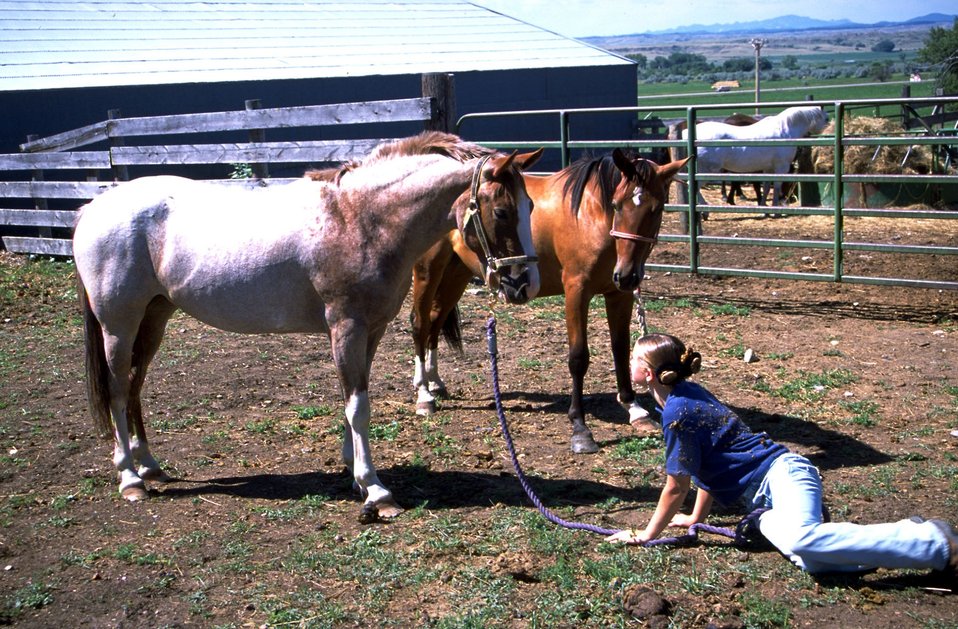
Two adopted Horses learning how to trust